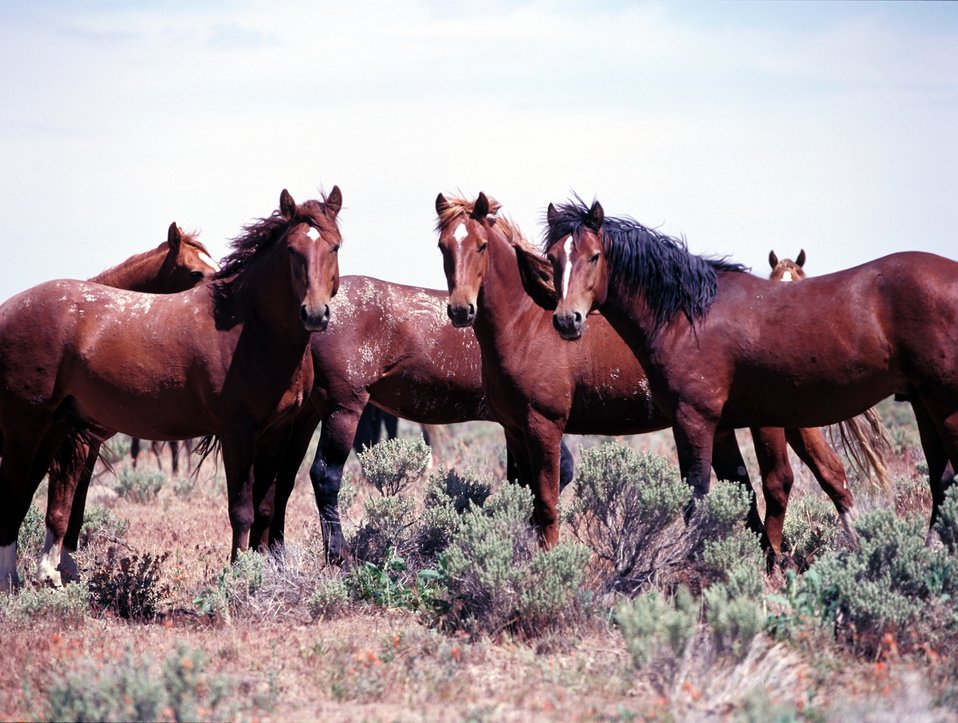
Onaqui Herd near Dugway, Utah.